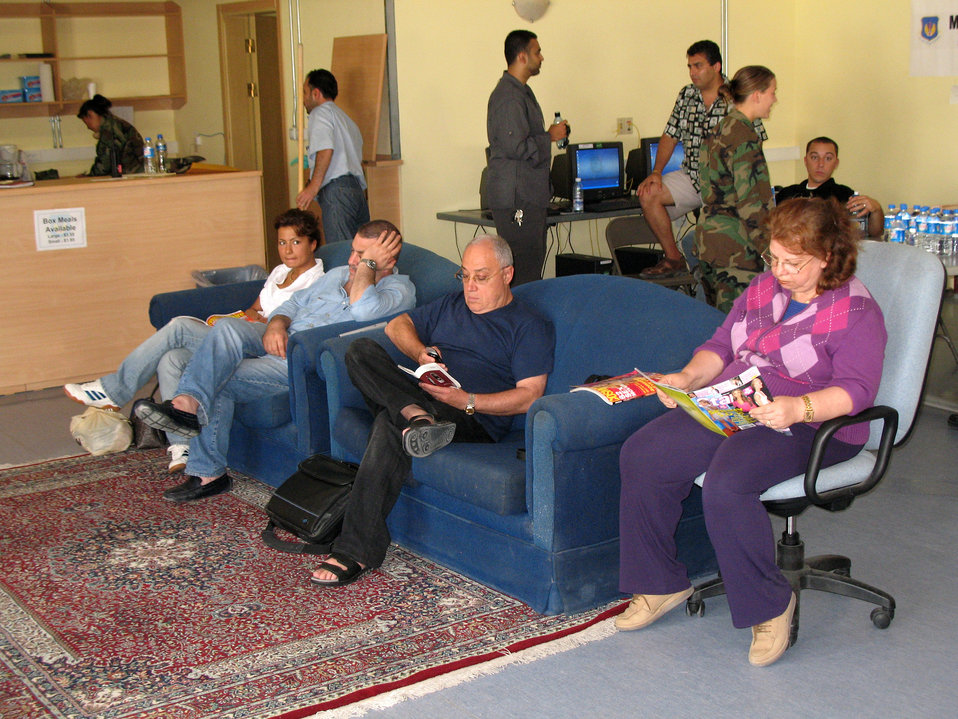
Care and comfort at Incirlik

American citizens who departed Lebanon read and watch television during their stay at the Patriot Village at Incirlik Air Base, Turkey, on July 22. The base has provided telephones, Internet service, television, beds and showers to the displaced American citizens while they wait to travel to the United States.